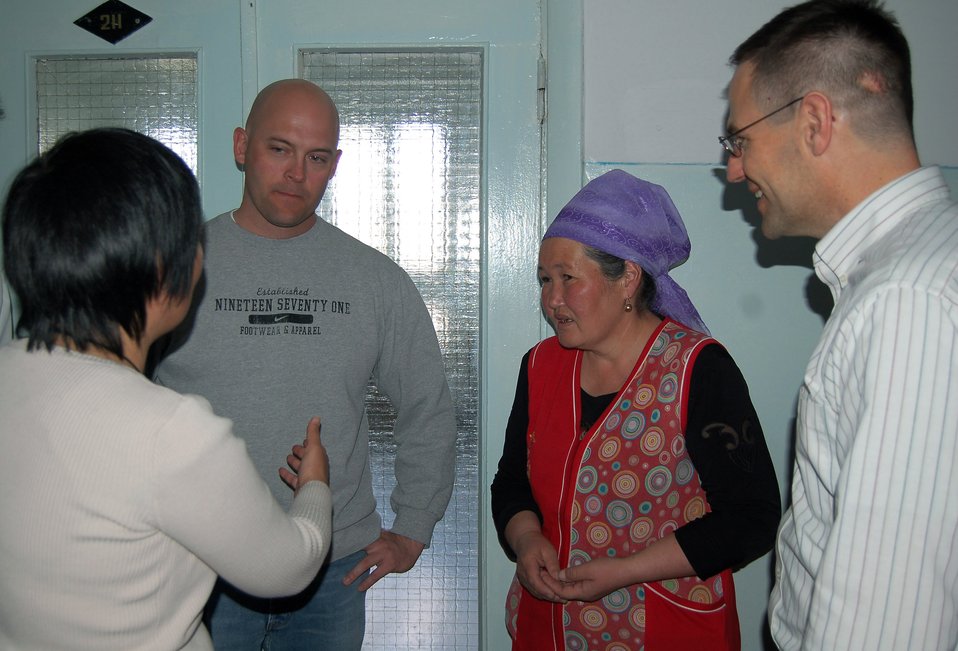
Manas Airmen help Children's Heart Ward

Master Sgt. Scott Kaulig talks with Sakin Tumenbaeva, the mother of the 100th heart surgery patient, Alymbekov Amanbek, through Aigul Karymshakova, a 376th Air Expeditionary Wing interpreter, March 29 in the Children's Heart Ward in Manas, Kyrgyzstan. Airmen from the Manas Air Base Outreach Society visited the Children's Heart Ward to celebrate the 100th heart surgery and meet the staff and patients. Sergeant Kaulig is the 376th Aircraft Maintenance Squadron KC-135 Stratotanker section chief.